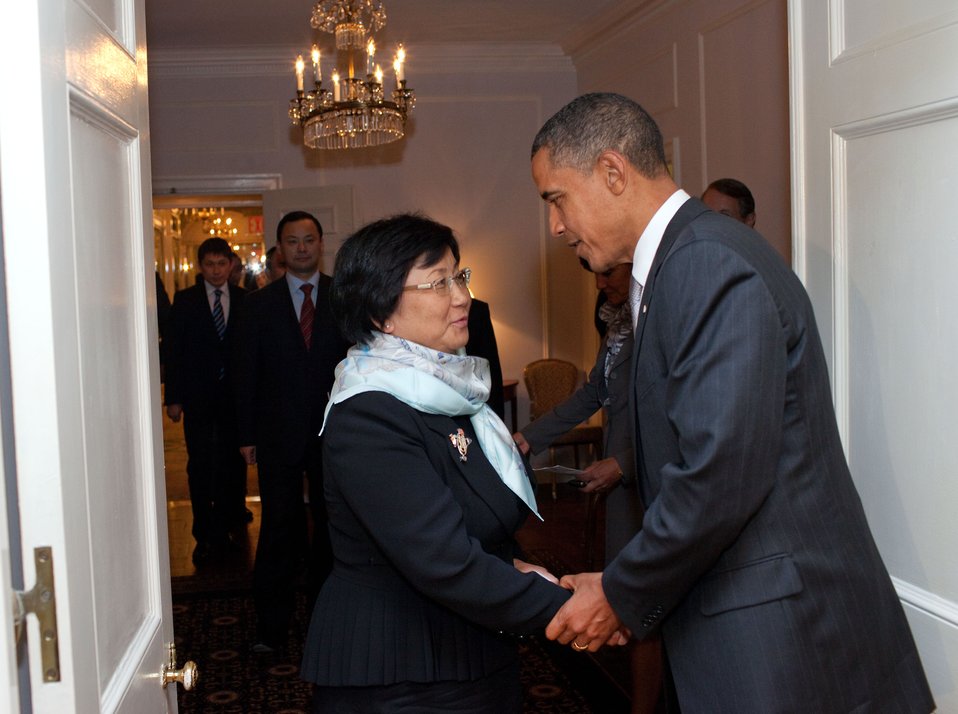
President Obama Greets Kyrgyzstan President Otunbayeva

U.S. President Barack Obama greets Kyrgyzstan President Roza Otunbayeva before the start of their bilateral meeting in New York, New York., on September 24, 2010.